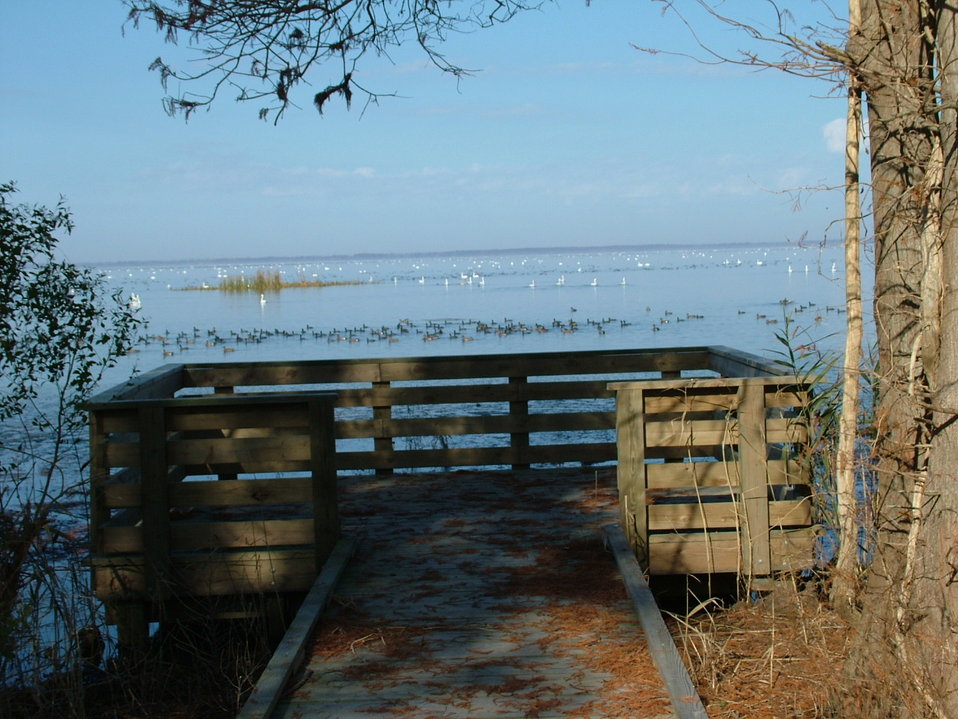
East Main Handicap Observation Platform

This observation platform at Mattamuskeet National Wildlife Refuge is accessible to everyone.